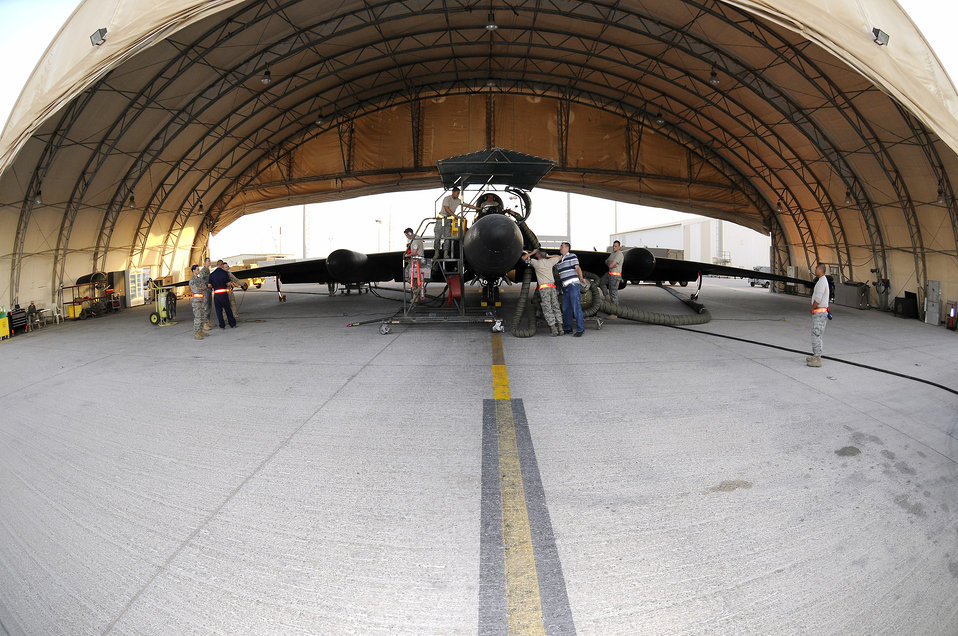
Prepping for high flying

Members of the 99th Expeditionary Reconnaissance Squadron prepare a U-2 Dragonlady for flight Nov. 14 at an air base in Southwest Asia. The 99th ERS is responsible for gathering intelligence in the area of responsibility in support of operations Iraqi and Enduring Freedom.